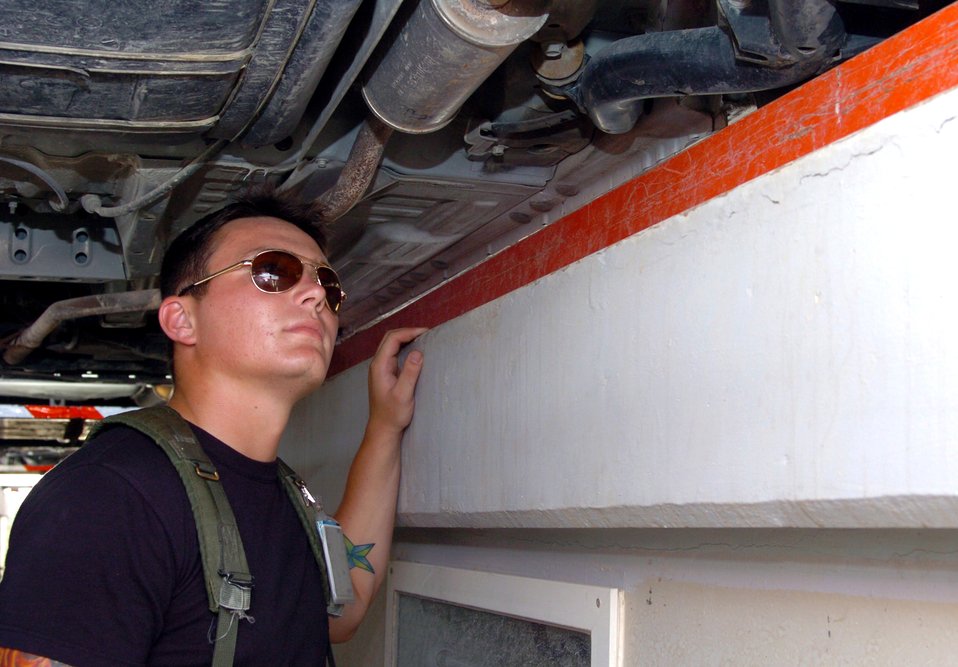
Vehicle searches provide first line of defense

Airman 1st Class Justin Hopkins inspects the undercarriage of a vehicle in the Vehicle Search Area at a deployed location in Southwest Asia on Saturday, May 20, 2006. All vehicles must be cleared before being granted access to the base. Airman Hopkins is assigned to the 380th Expeditionary Security Forces Squadron, and is deployed from Scott Air Force Base, Ill.